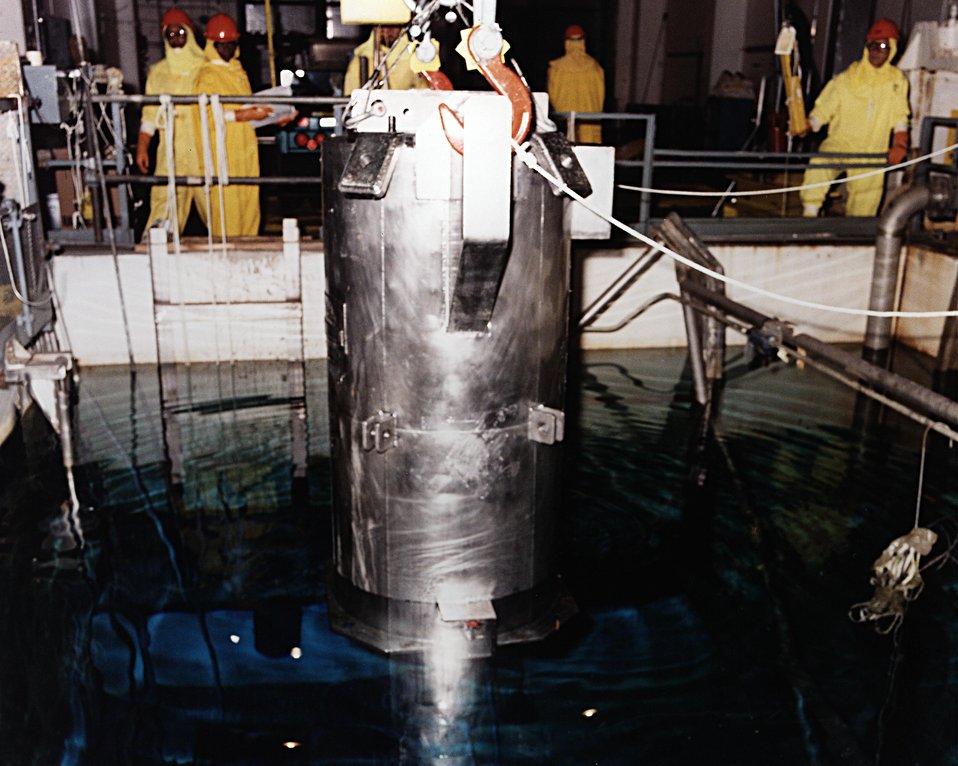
SPENT FUEL FROM DOMESTIC RESEARCH REACTOR LOWERED INTO L BASIN AT SRS.